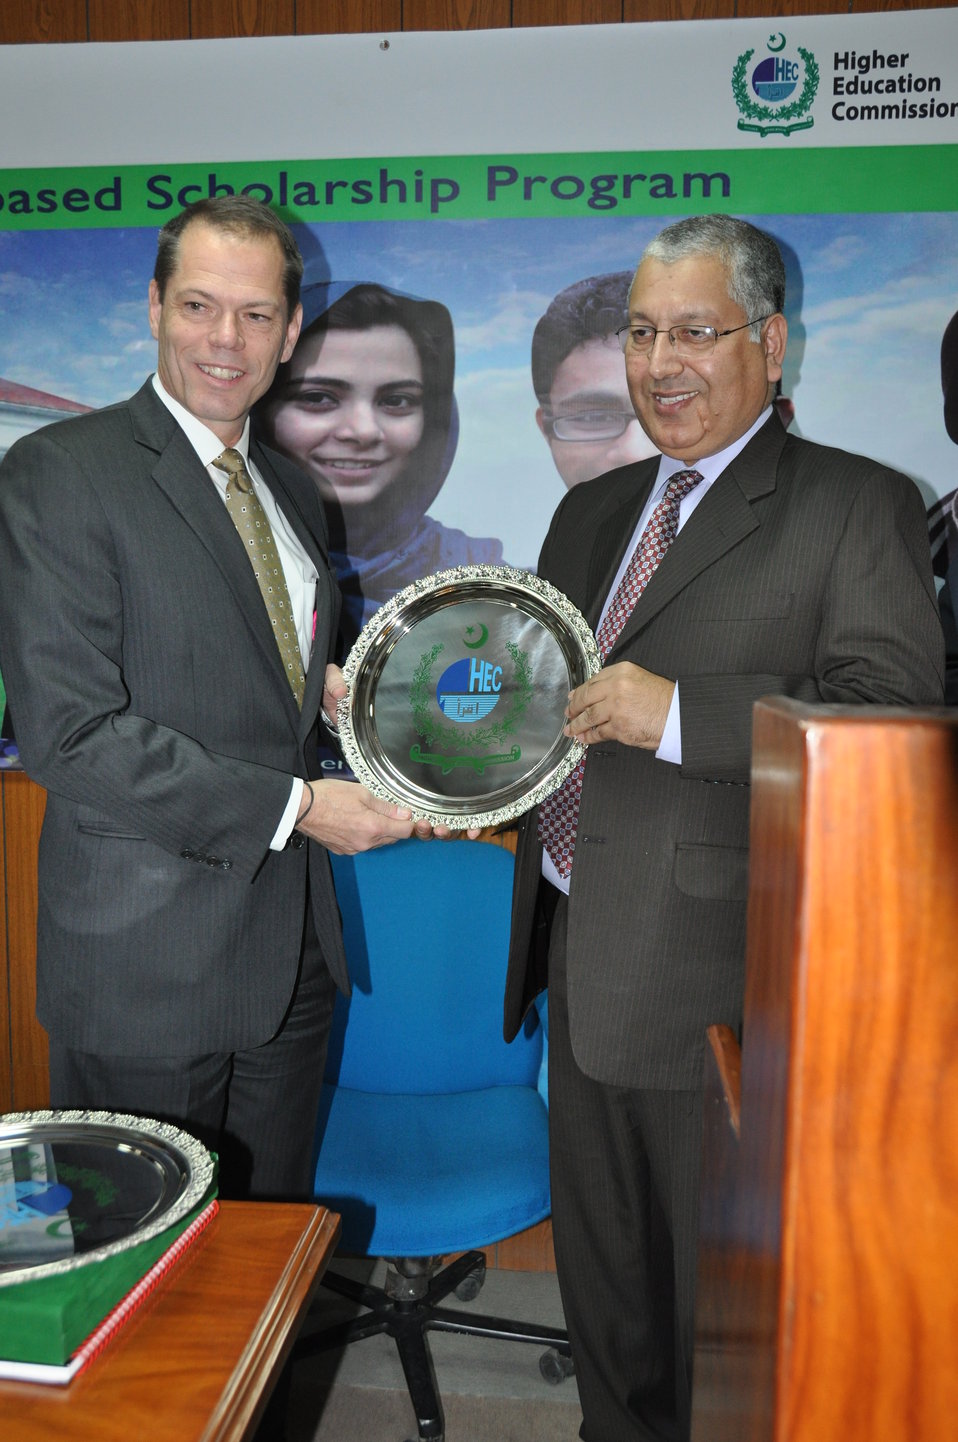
Mr. Larry Sampler, USAID’s Assistant Administrator, Office of Afghanistan and Pakistan Affairs (was given a commemorative shield by Prof. Dr. Mukhtar Ahmad, Executive Director, Higher Education Commission